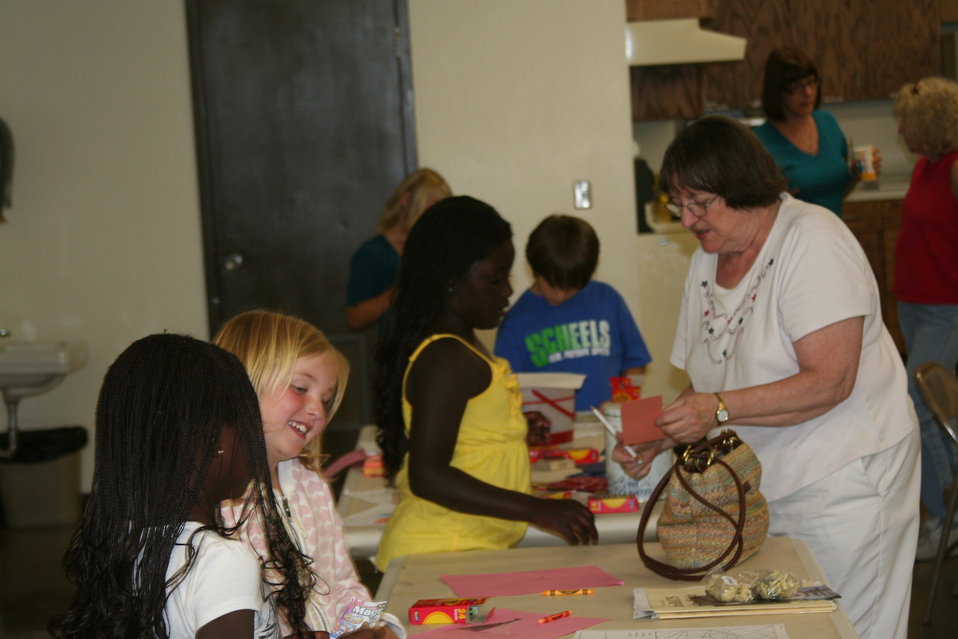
Creatures of the Night 2011

More night creature activities waiting until we can go use the bat detector.